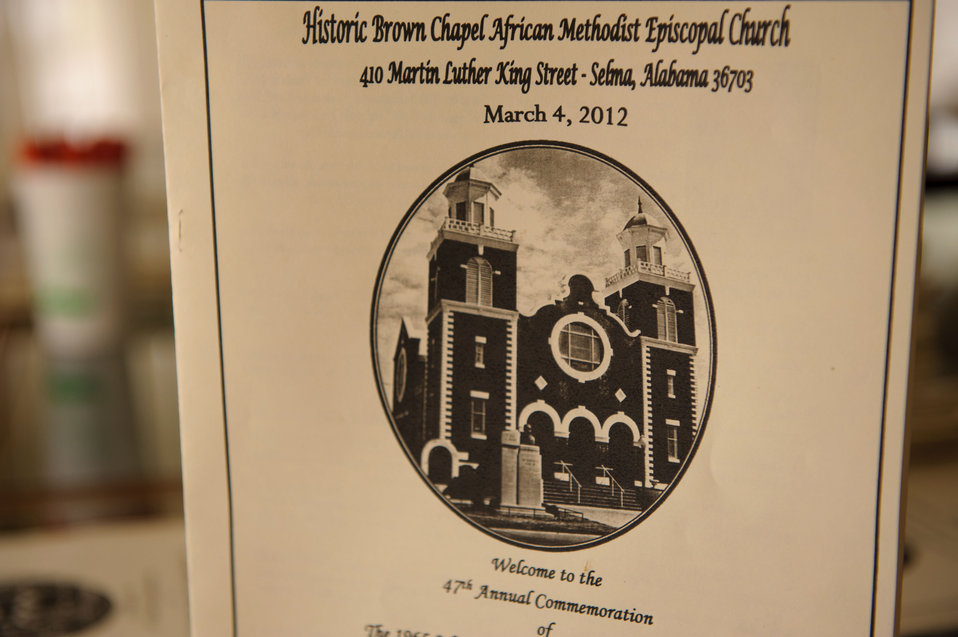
March 4, 2012 47th Annual Commemoration of the Congressional Civil Rights Pilgrimage

As part of the celebrations, EPA Administrator Lisa P. Jackson spoke at the Brown Chapel AME Church in Selma, Alabama.
Her remarks as prepared